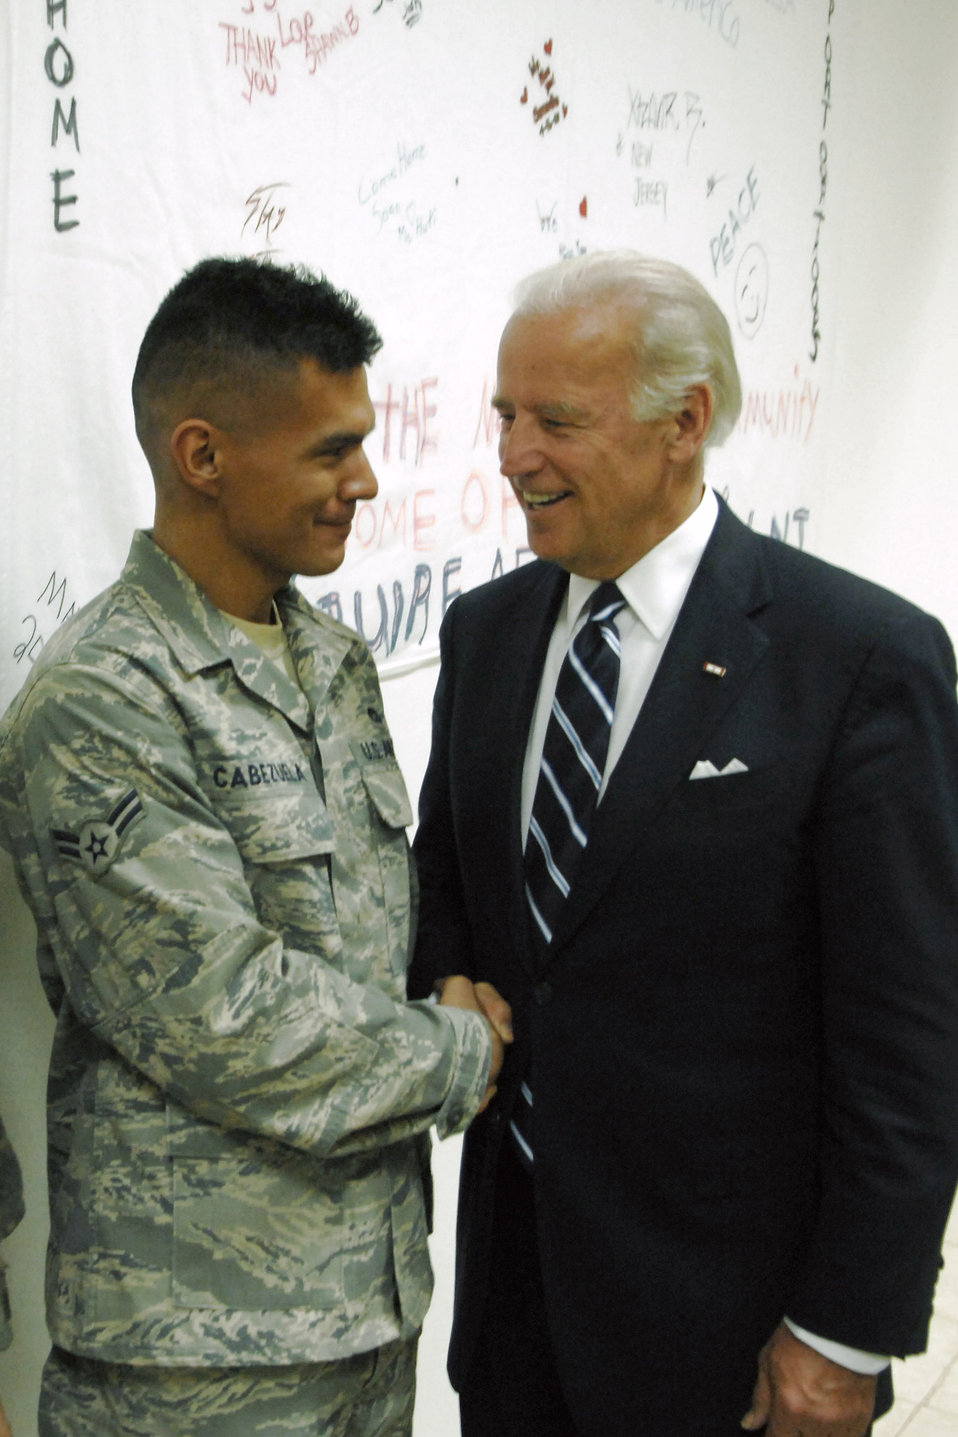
Kirkuk servicemembers host vice president-elect

Vice president-elect Joe Biden shakes hands with Airman 1st Class Jose Cabezuela Jan. 13 at Kirkuk Air Base, Iraq. The Heresord, Texas, native was among the servicemembers the senator thanked for their service. Airman Cabezuela is assigned to the 506th Expeditionary Logistics Readiness Squadron and is deployed from Kirtland Air Force Base, N.M.